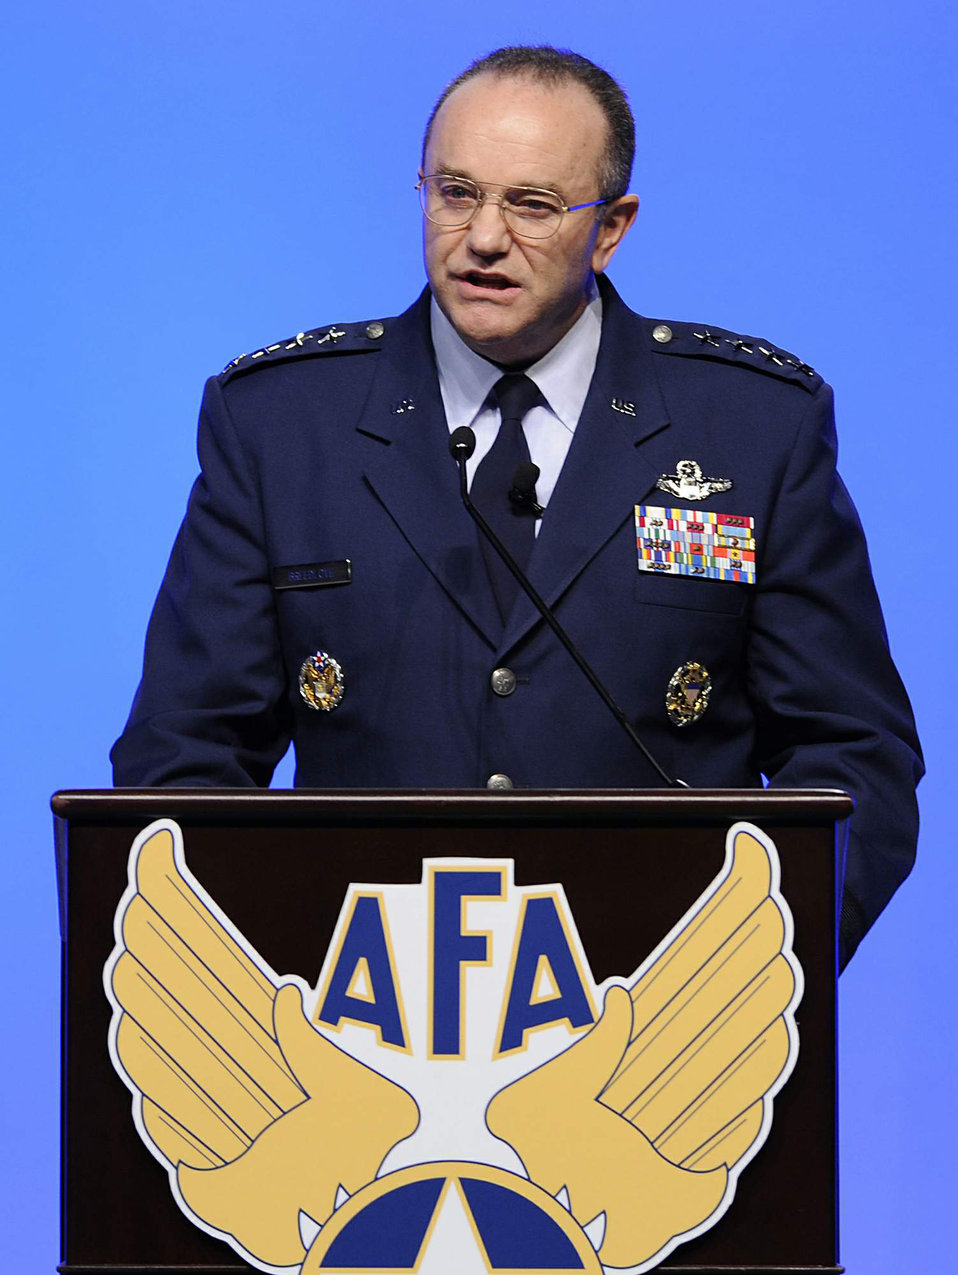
Vice CSAF

Air Force Vice Chief of Staff Gen. Philip M. Breedlove speaks Feb. 17, 2011, during the Air Force Association's 2011 Air Warfare Symposium and Technology Exposition in Orlando, Fla. General Breedlove talked about the Air Force's future during an era of dwindling budgetary resources.